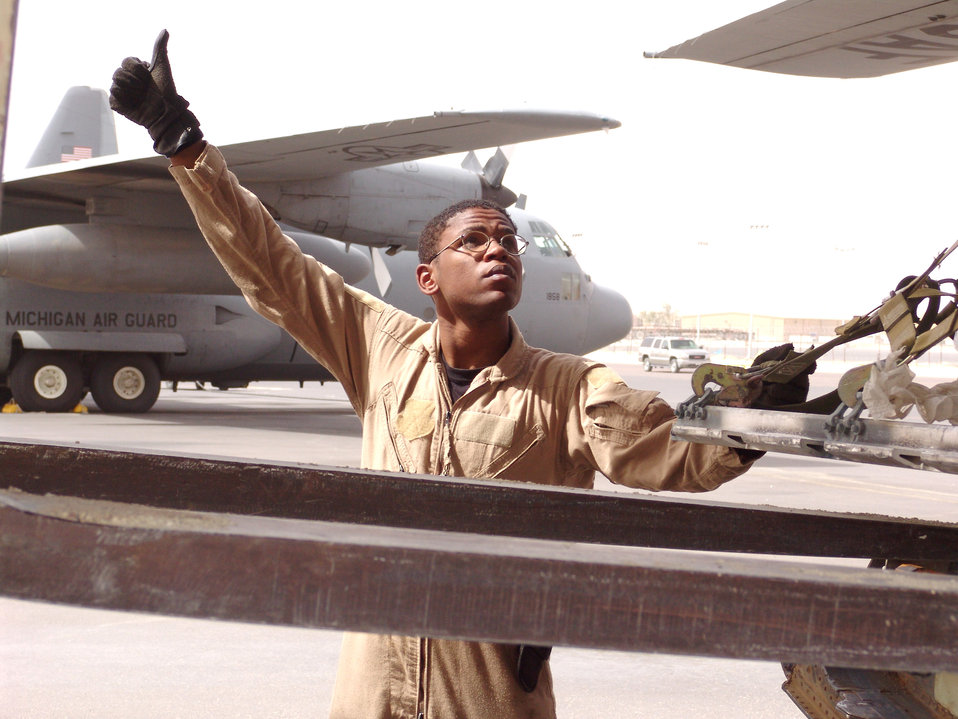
Ready for takeoff

SOUTHWEST ASIA -- Senior Airman Jeremy Alford signals to the forklift operator to raise the pallet for proper placement onto a C-130 Hercules. He is a loadmaster with the 737th Expeditionary Airlift Squadron at a forward-deployed location and is from Pope Air Force Base, N.C.